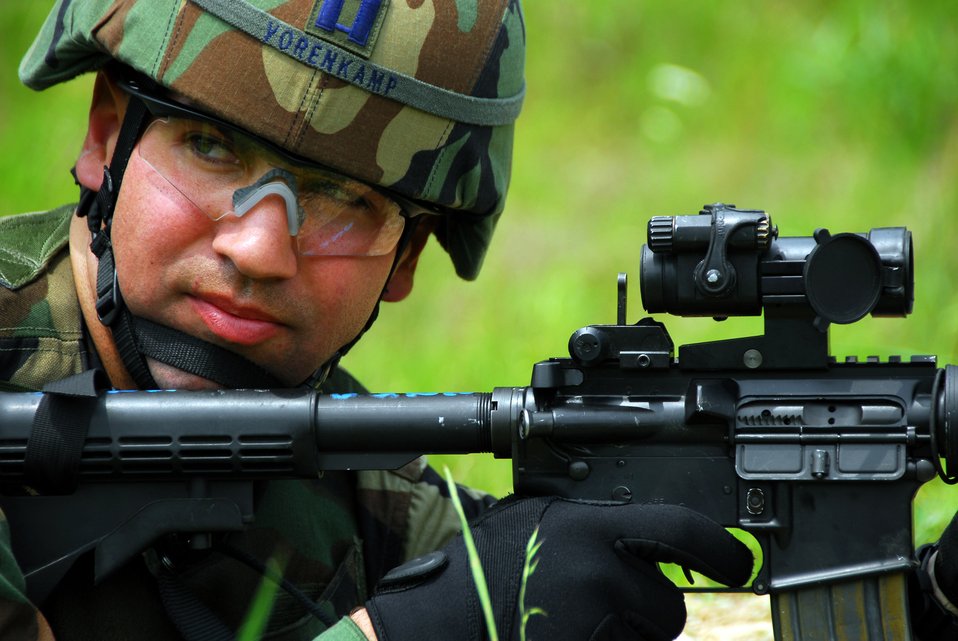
Fire when ready!

Capt. Daniel Vorenkamp prepares to fire his rifle June 8 during a training scenario near Osan Air Base, South Korea. Captain Vorenkamp is with the 51st Security Forces Squadron's quick reaction team, which provides security for all military personnel at the base.